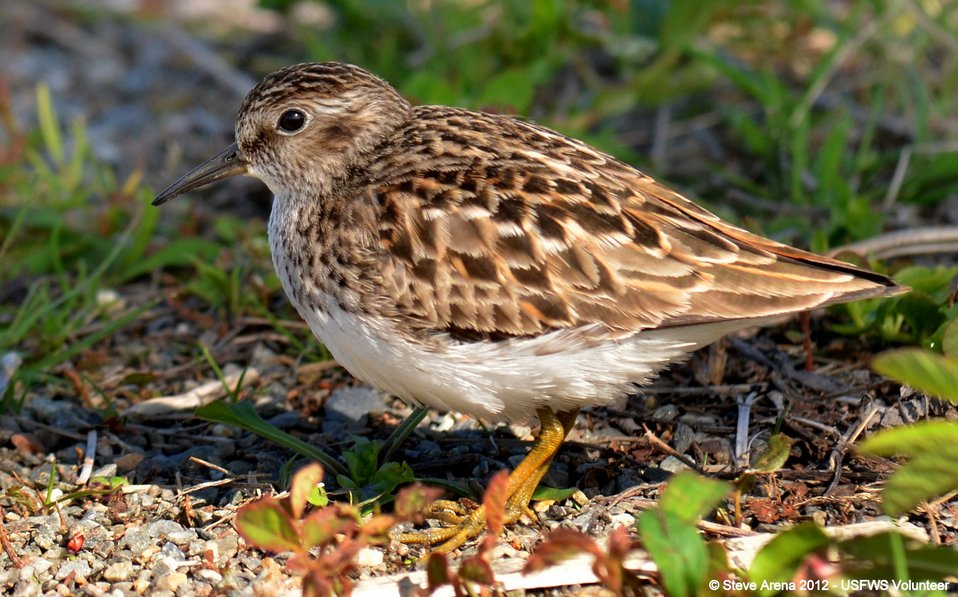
Least Sandpiper (Calidris minutilla) Great Meadows NWR, Concord, MA

Least Sandpiper Great Meadows NWR, Concord, MA

Credit: Steve Arena/USFWS

18 May 2012